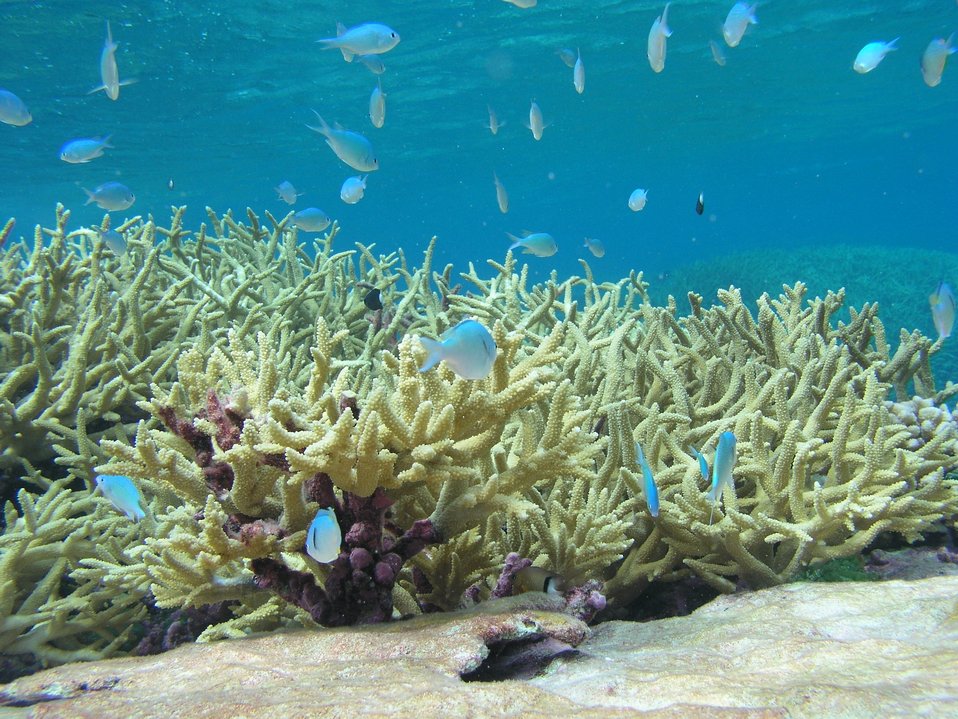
Chromis reef fish and staghorn coral at Palmyra Atoll NWR

Reef fish called Chromis viridis (blue-green chromis) and Chromis margaritifer (bicolor chromis) swim among the staghorn coral (Acropora acuminata) at Palmyra Atoll National Wildlife Refuge in the Pacific.